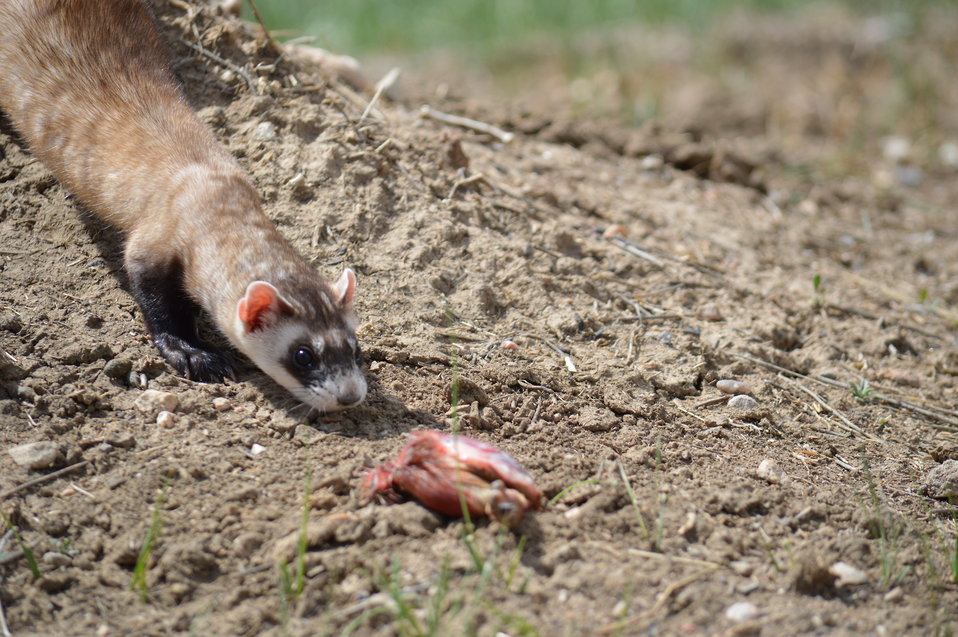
Interns visit the NBFFCC

In the summer of 2012, USFWS Region 6 interns visited the National Black-footed Ferret Conservation Center (NBFFCC) in Colorado to learn how the program reintroduces the endangered Black-footed ferret back into its native habitat.